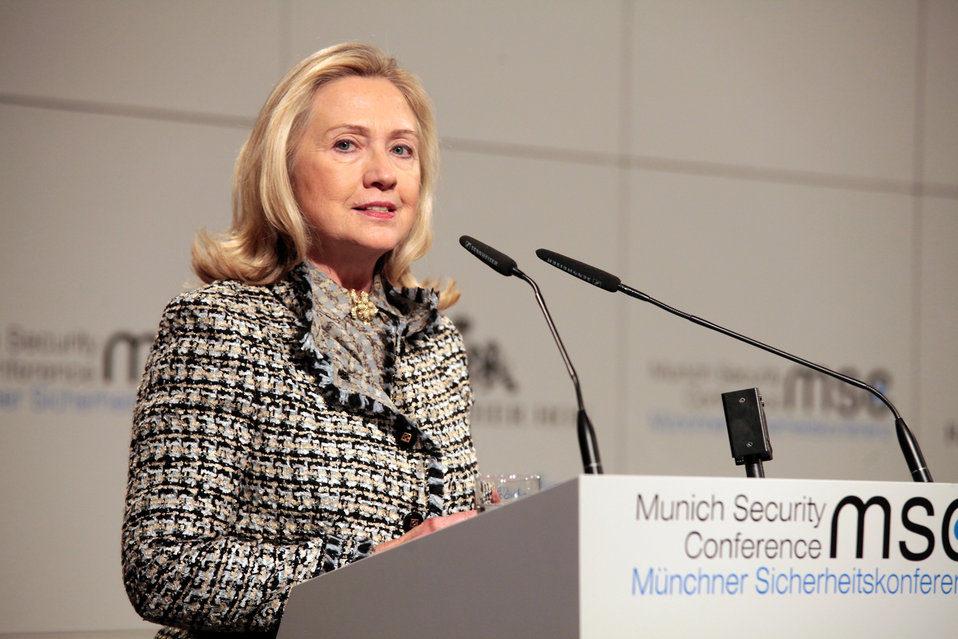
Secretary Clinton Delivers Remarks at the Munich Security Conference

U.S. Secretary of State Hillary Rodham Clinton delivers remarks at the Munich Security Conference at the Bayerischer Hof in Munich, Germany, on February 4, 2012.